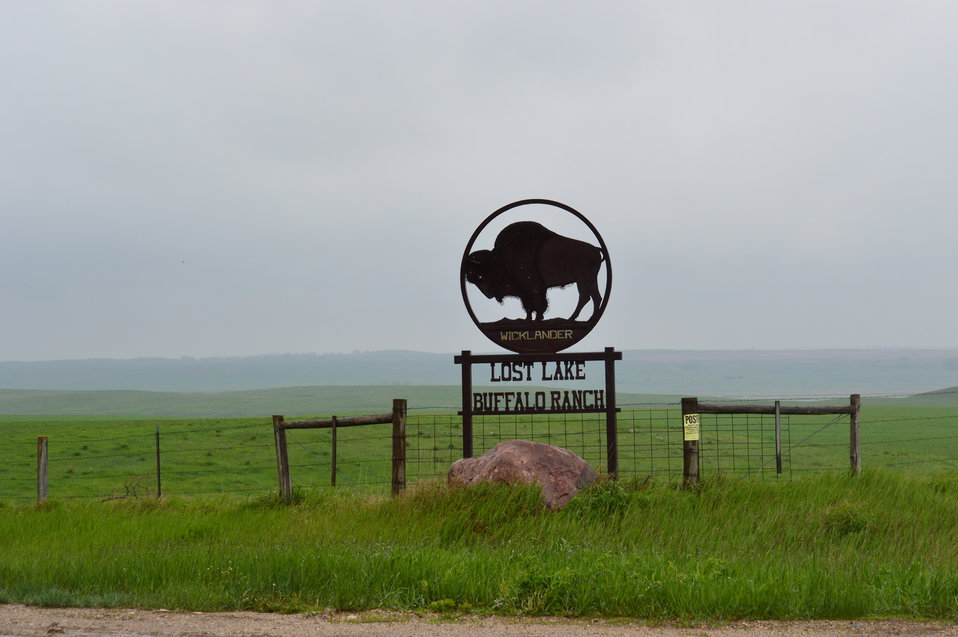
Lost Lake Buffalo Ranch sign

Ranch sign on the drive into Lost Lake NWR.